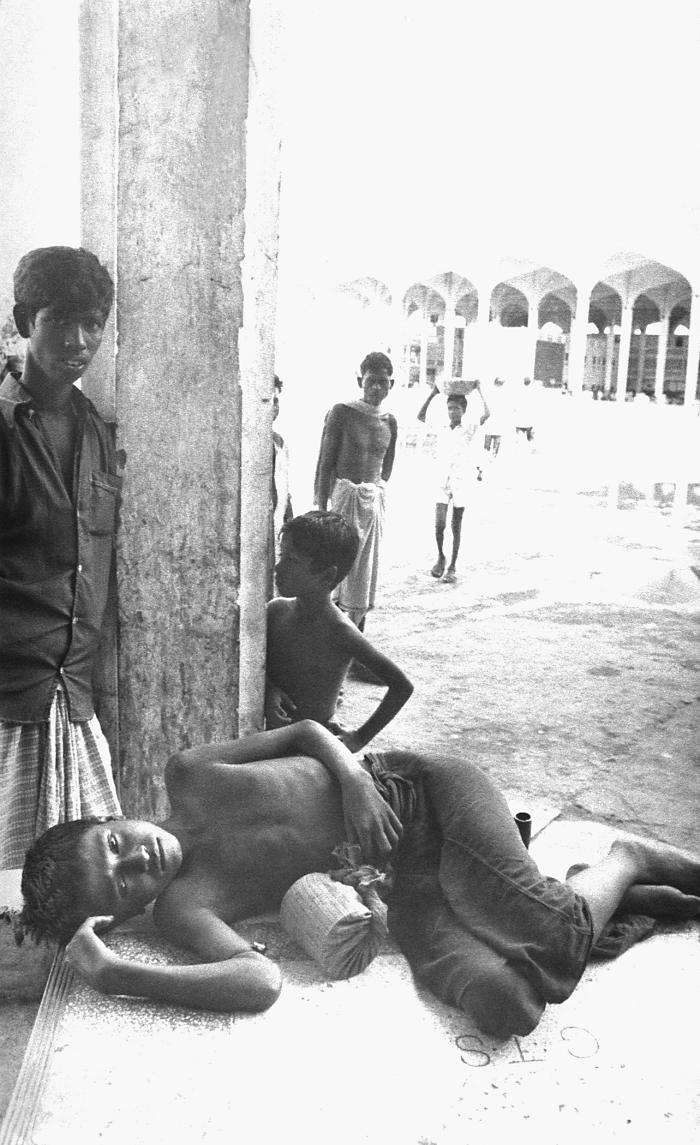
The young man lying prostrate alongside a railroad station in the capital city of Dhaka, Bangladesh, was suffering from malnutrition, and begging for food. This image was part of a series provided by Dr. Stan Foster, and captured by Pierre Claquin, M.D., B.A.C., who at the time was a member of the World Health Organization's Smallpox Eradication Program. It was part of a series photographed by former E.I.S. officer, Stanley O. Foster M.D., M.P.H., and was one of a series entitled 'The Story of One Smallpox Jeep', which depicted the travails faced by the jeep, and its occupants of public health practitioners, as they road through the Bangladesh countryside in an attempt to eradicate smallpox from the country.